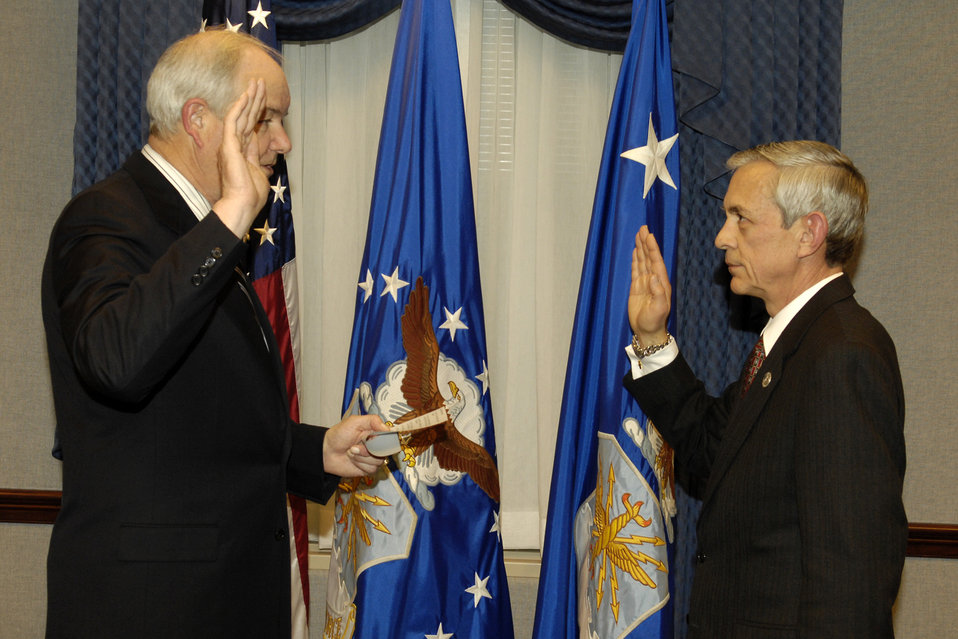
Air Force welcomes new manpower and reserve leader

Secretary of the Air Force Michael W. Wynne (left) swears in Craig Duehring as the Air Force's new assistant secretary of the Air Force for manpower and reserve affairs in a ceremony at the Pentagon Jan. 24.